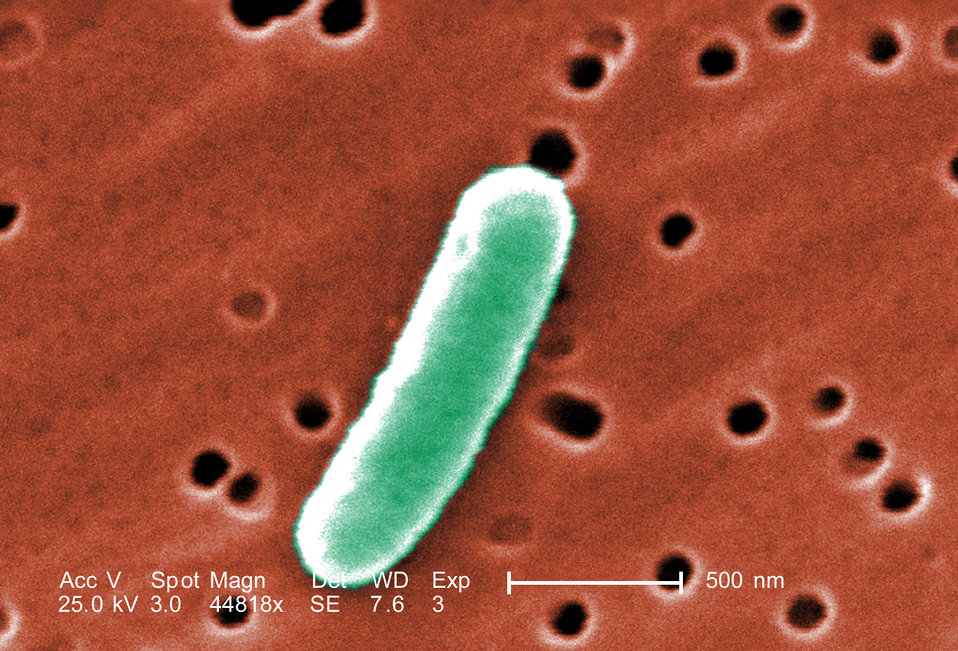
At an extremely high magnification of 44, 818X, twice that of PHIL 10574 and 10575, this colorized scanning electron micrograph (SEM) revealed some of the morphologic details displayed by a single Gram-negative Escherichia coli bacterium. This bacterium was a member of the strain, 0:169 H41 ETEC (Enterotoxigenic E. coli). See PHIL 10576 for a black and white version of this image.Enterotoxigenic E. coli, a common cause of bacterial diarrhea...